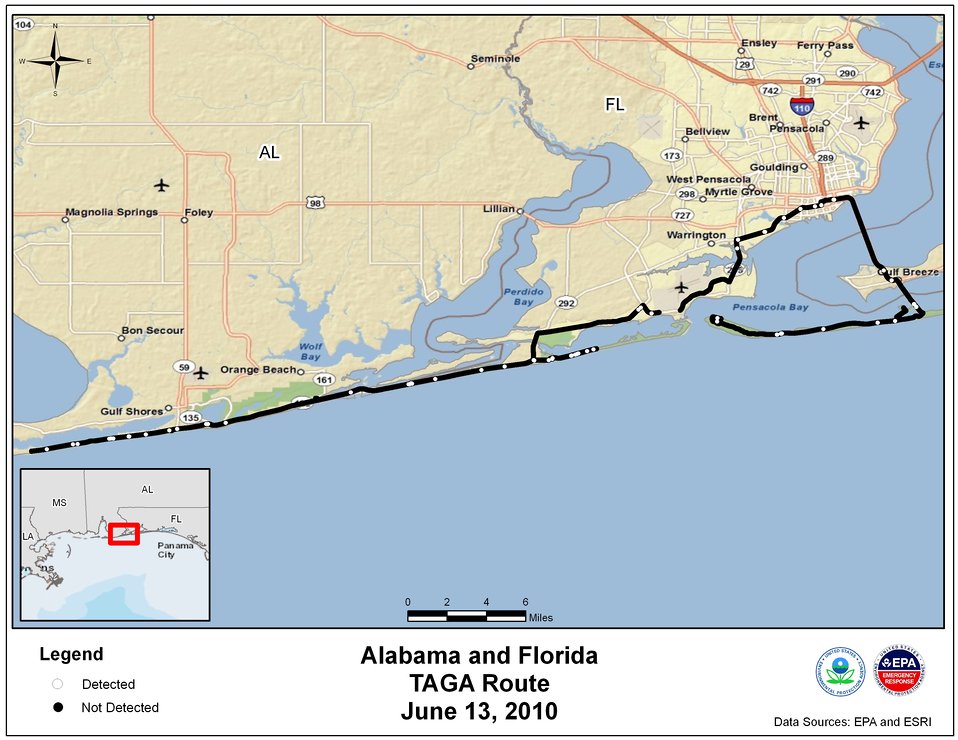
EPA TAGA Air Monitoring Locations June 13, 2010